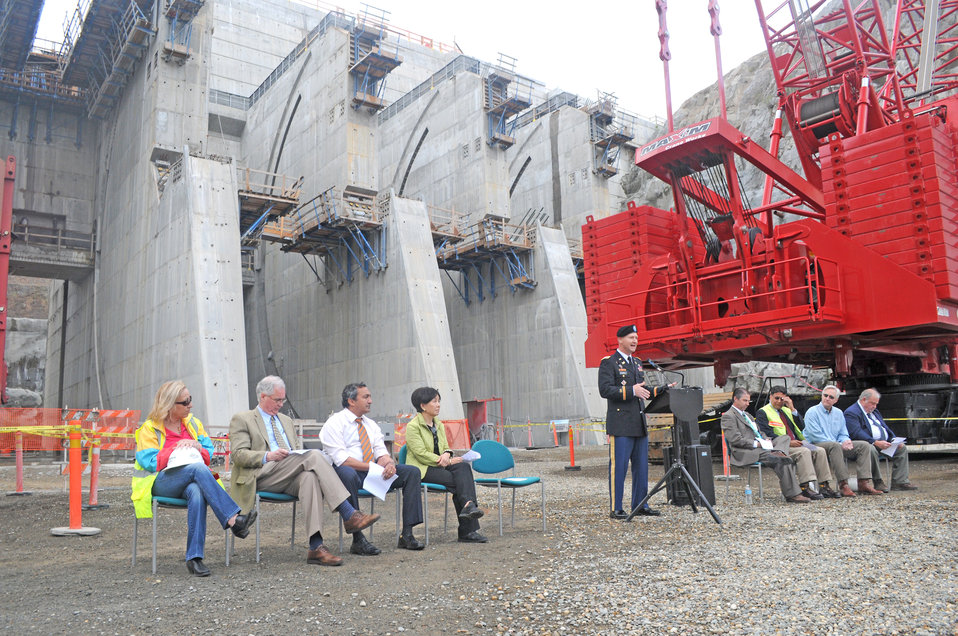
Corps hosts elected officials, partners to celebrate progress on Folsom spillway

Col. Michael Farrell, commander for the U.S. Army Corps of Engineers Sacramento District, speaks during a media event and site tour April 26, 2014at Folsom Dam auxiliary spillway in Folsom, Calif. Elected officials and project partners came together to celebrate the transition from concrete placement to gate installation this summer on the new dam, which will allow operators to release water earlier and more quickly during large storm events. The auxiliary spillway project is part of a $900-million cooperative effort to improve the safety of Folsom Dam and reduce flood risk for the Sacramento area.